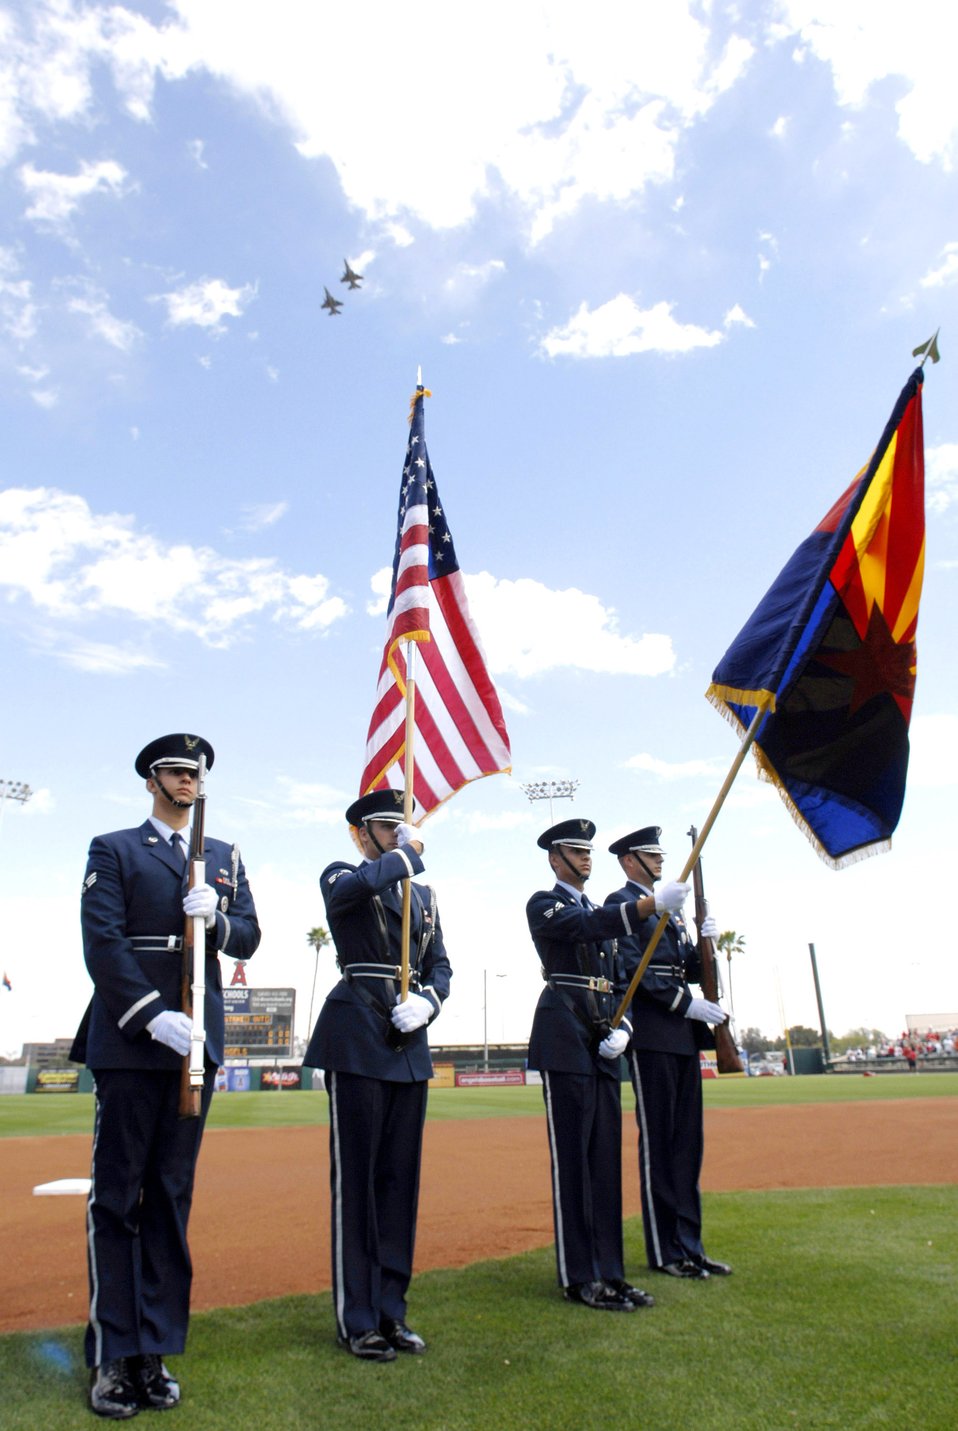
Play ball!

The Luke Air Force Base Honor Guard display the colors while the 61st Fighter Squadron performs a flyover for the Arizona Diamondbacks and Anaheim Angels game March 21. Servicemembers were invited to the game in support of Air Force Week.